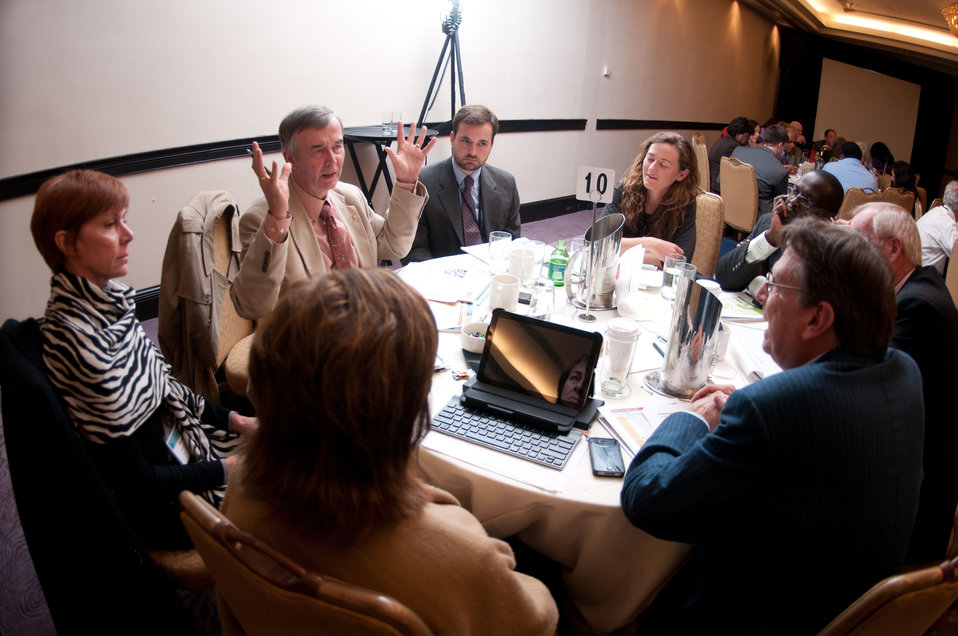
Participants discussed topics that plenary speakers talked about, during the general session of the Rural Wealth Creation and Livelihoods national conference for practitioners, researchers and policymakers, held at the Dupont Hotel, Washington DC, on Monday October 3, 2011.